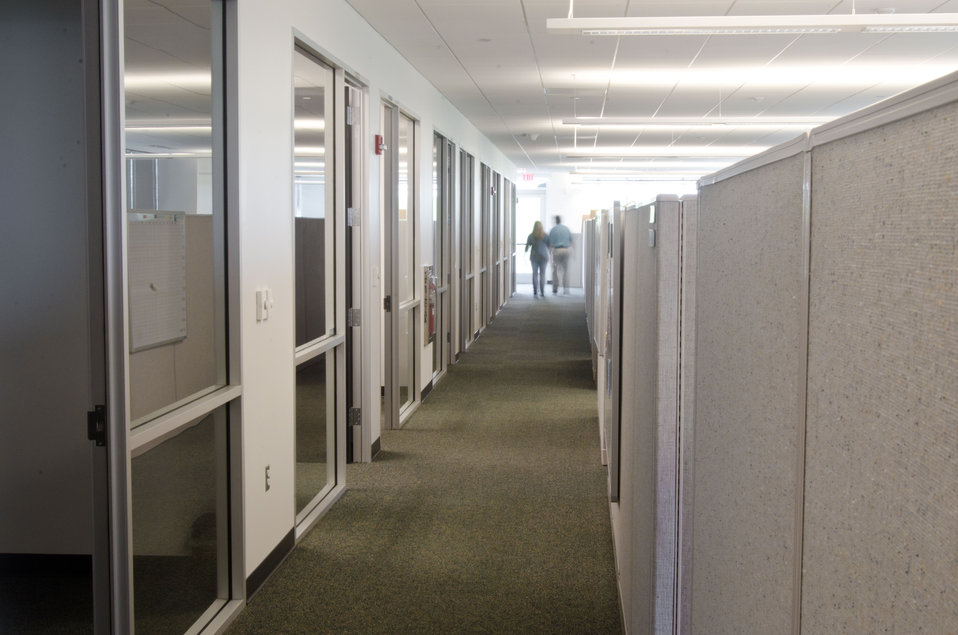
Supervisory offices and staff cubicles at Unilife, a medical device company focused on the design, development, manufacture and supply of a proprietary range of retractable syringes on Monday, April 20, 2011 in York, PA. In partnership with Sanofi-aventis, Mikron Group, and MDMA, U.S. Department of Agriculture Rural Development was able to guarantee $18,000,000 through its Business and Industry Guaranteed Loan Program to construct a custom-built, global headquarters and commercial production facility in York, Pennsylvania. The 165,000 sq. ft. facility was completed in late 2010 and can accommodate future growth as well as the Company’s projected demand from pharmaceutical and healthcare companies for its proprietary range of Unifill ready-to-fill (prefilled) and Unitract general purpose safety syringes. Stage one of the facility is designed to accommodate the production of up to 400 million Unilife syringes per year and to meet stringent pharmaceutical standards for primary drug containers. Adjacent to the manufacturing facility is Unilife’s global headquarters that support administrative, marketing, new product development, quality laboratories and other operational functions. Unilife, which first arrived in Pennsylvania in 2006. The company has doubled its employees for the past three years. There are approximately 150 employees, and they expect to double the number by 2015.